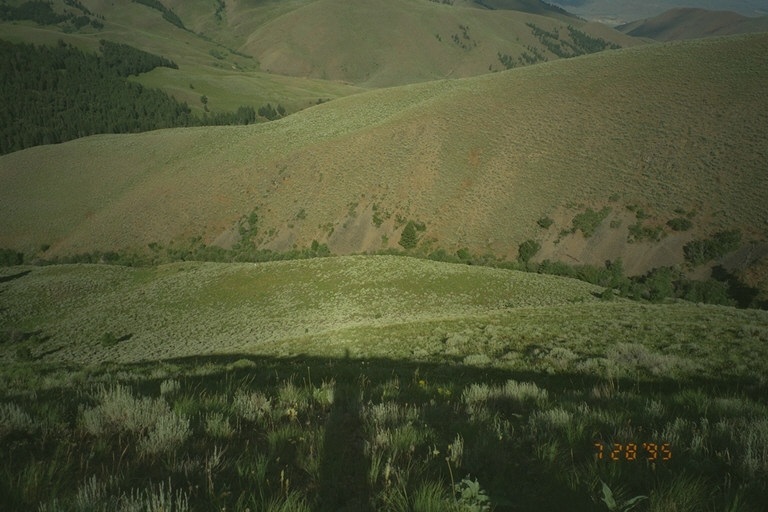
Riparian area Public Lands Salmon Field Office UCSC Upper Columbia Salmon Clearwater District